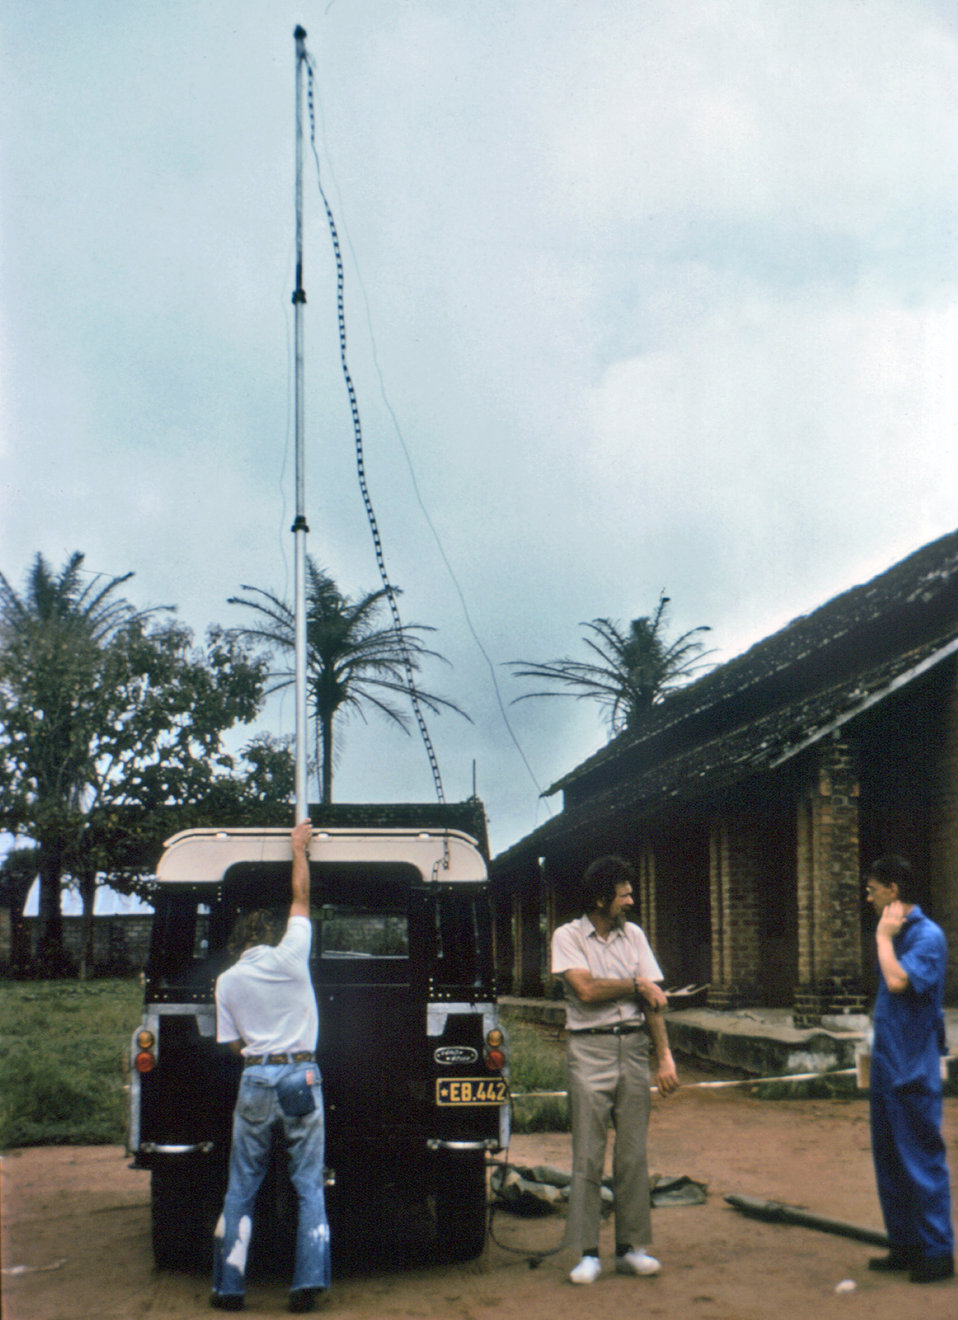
This 1976 photograph captured during an Ebola survey effort in Yambuku, Zaire (now known as the Democratic Republic of the Congo), showed Del Conn (left) as he was adjusting equipment on a vehicle, while Dr. Karl Johnson (center), and Dr. Dennis Courtois (right) were standing to his right.